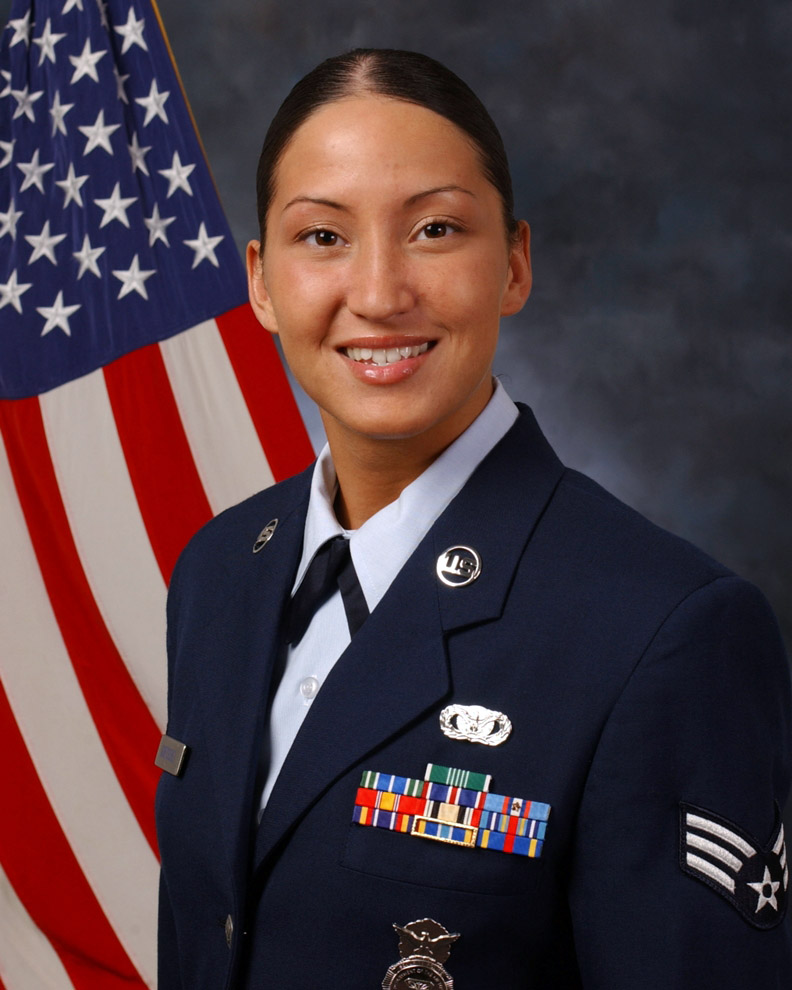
Air Force officials honor 12 Outstanding Airmen of the Year

Senior Airman Alicia Goestschel of Royal Air Force Mildenhall, England, is one of the 12 Outstanding Airmen for 2008.